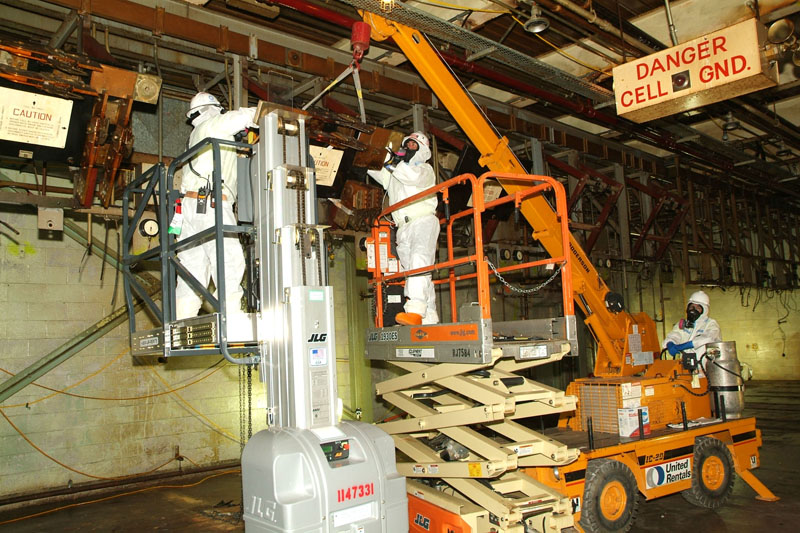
Recovery act workers use lifts to remove copper bus bars from the feed plant, Paducah.